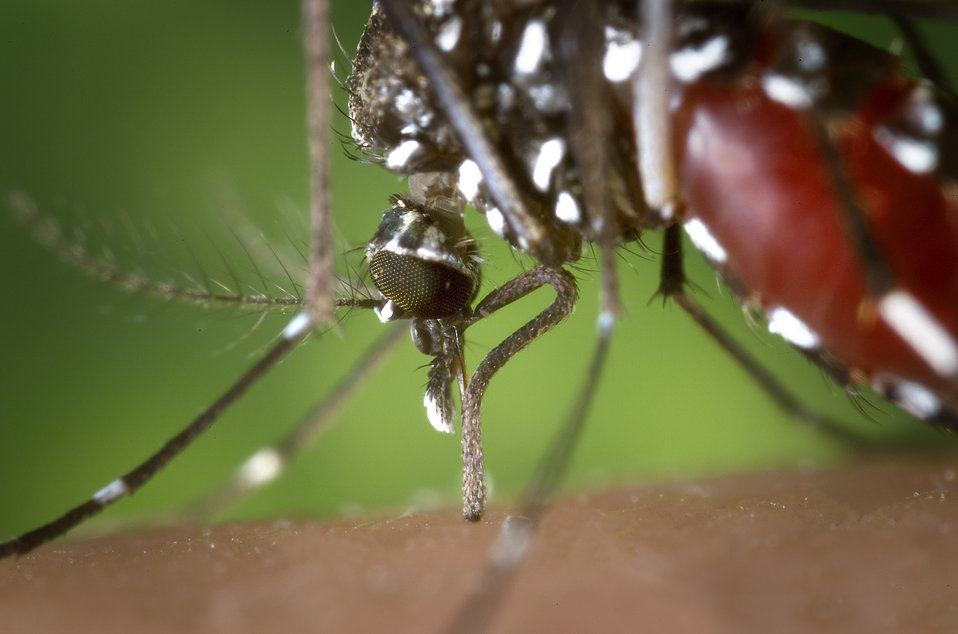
The proboscis of an Aedes albopictus mosquito feeding on human blood.